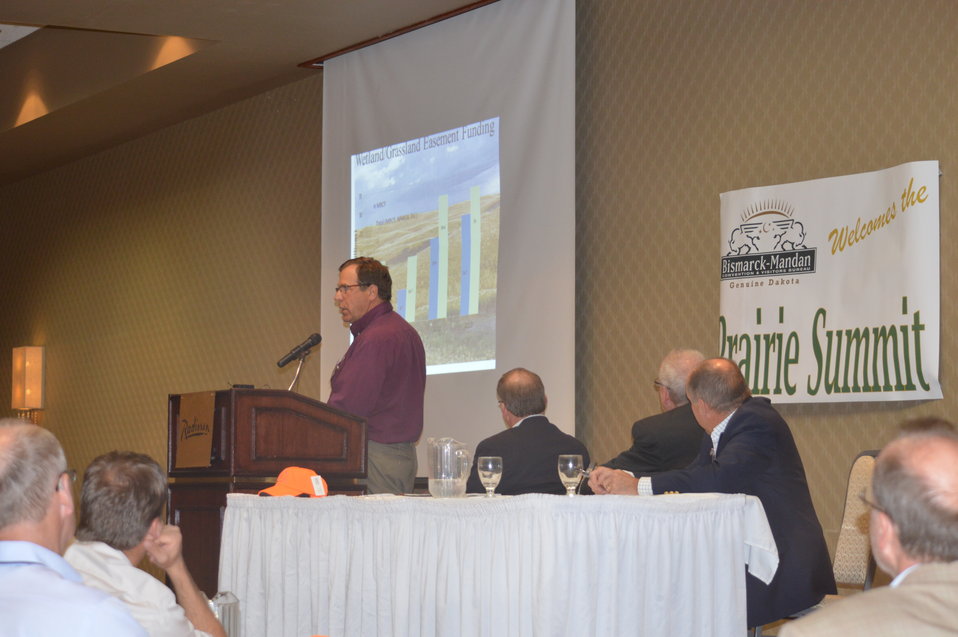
Lloyd Jones speaking at the Prairie Summit

Through the efforts of Ducks Unlimited and its partners, a Prairie Summit meeting was held in June 2013 in Bismarck, North Dakota, bringing key stakeholders to the table to identify and begin to address the immediate needs of the overall effort to conserve wetlands and grasslands, as well as bring media attention to the issues at hand and the urgency of the situation.